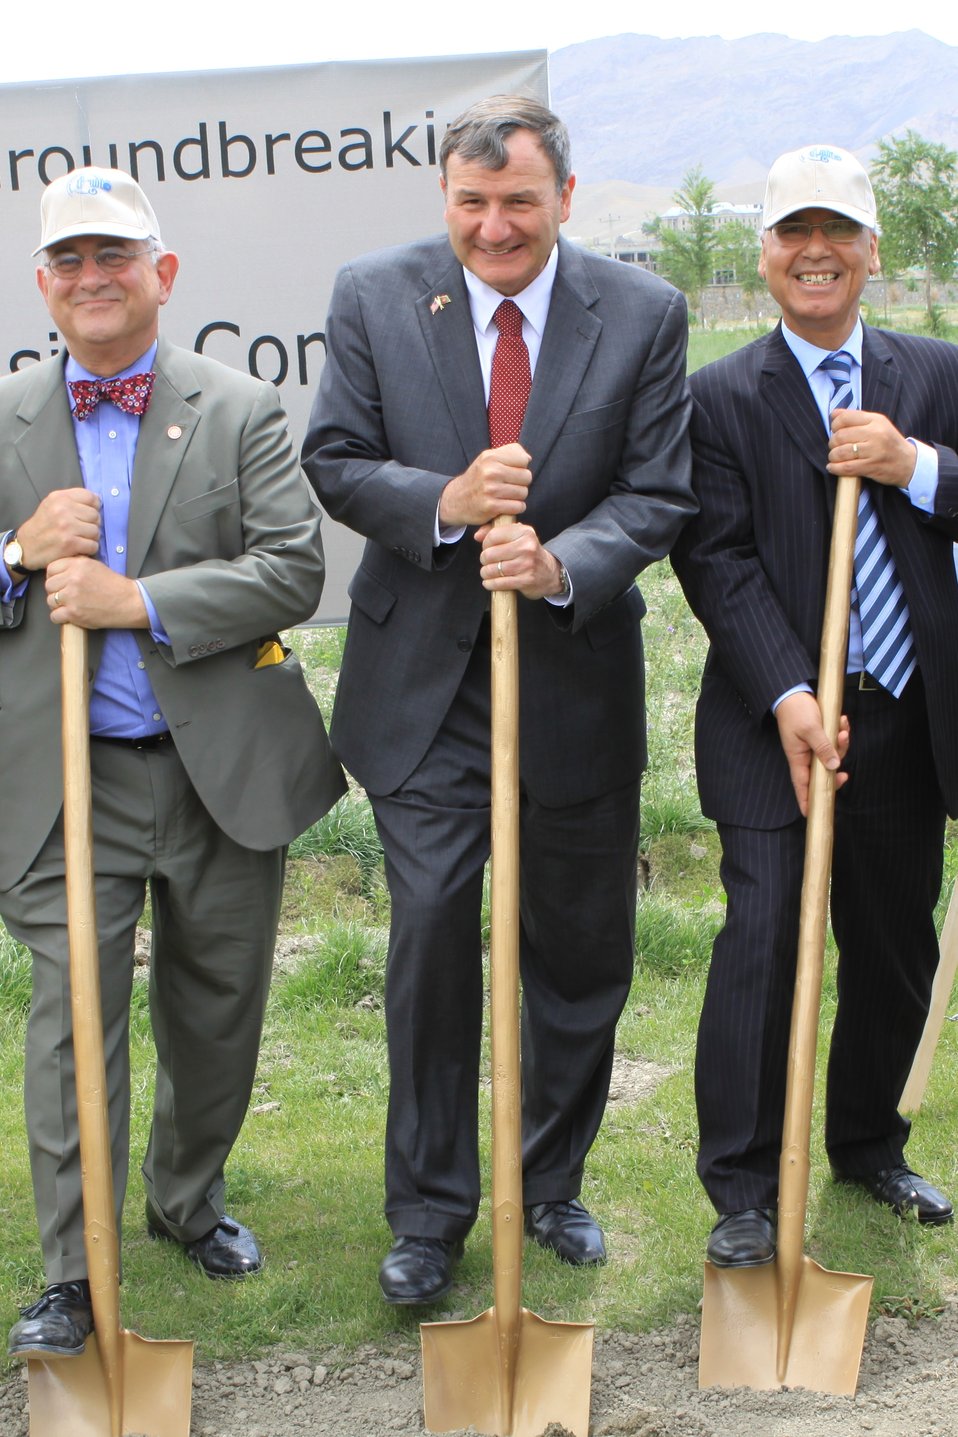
100526 AUAF Graduation 412